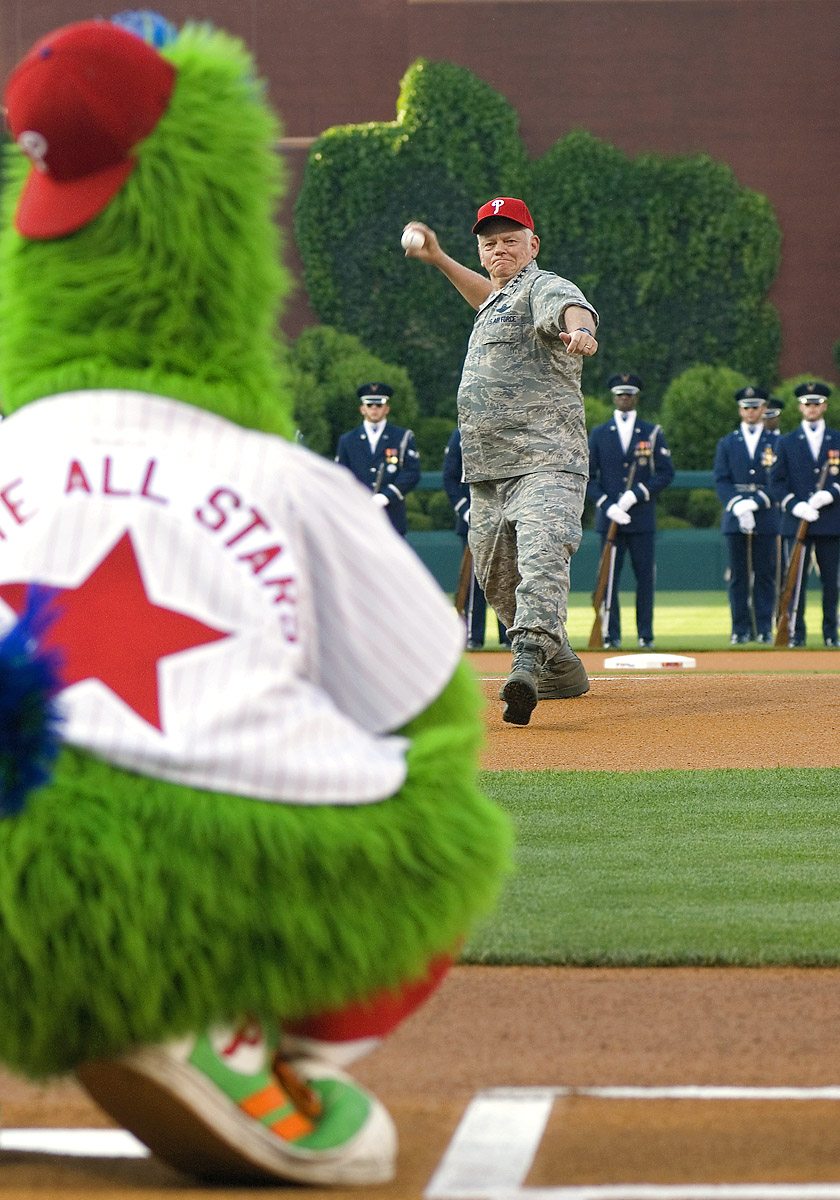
The Philadelphia Phillies saluted the Air Force

Gen. Arthur J. Lichte, commander of Air Mobility Command, throws out the first pitch during pre-game activities at the Philadelphia Phillies - Colorado Rockies game May 26. Activities at the game were held in conjunction with Air Force Week-Philadelphia. The week is designed to broaden awareness of the U.S. Air Force's role in the war on terrorism and strengthen support for Airmen serving worldwide in defense of freedom.